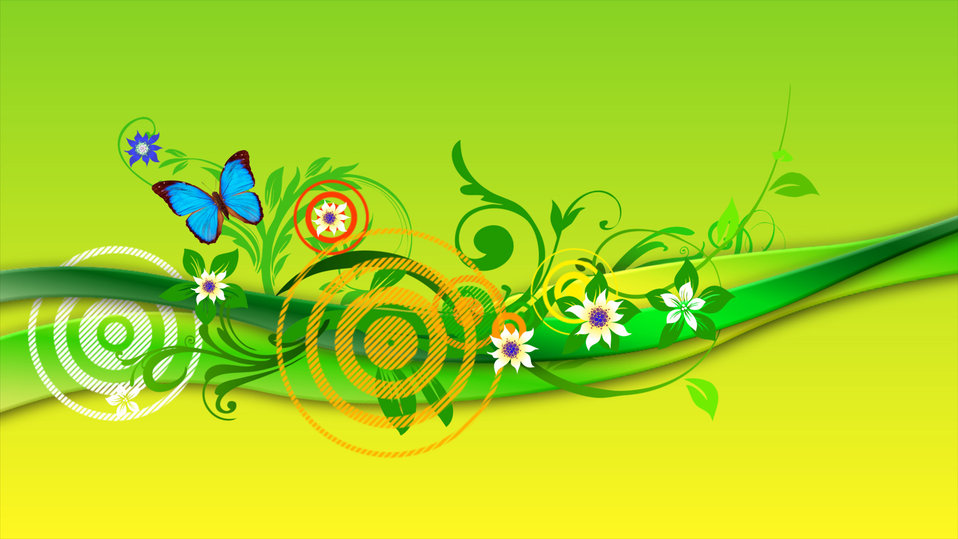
Spring background

Butterfly flowers ribbons.